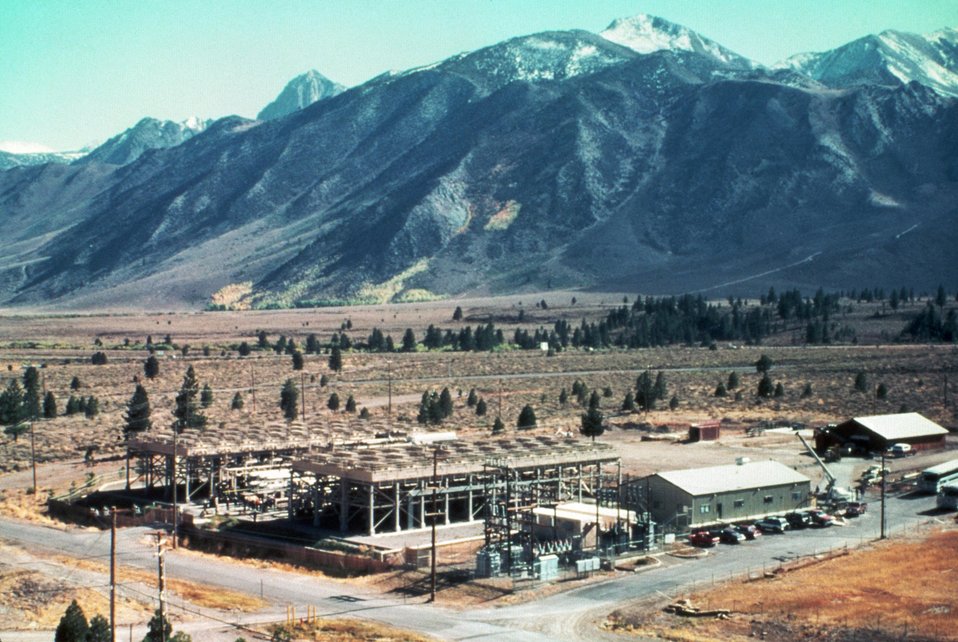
MAMMOTH PACIFIC GEOTHERMAL POWER PLANT IN THE EASTERN SIERRA NEVADA MOUNTAIN RANGE, CALIFORNIA.

THE MAMMOTH GEOTHERMAL PLANT IS AN EXAMPLE OF THE ENVIRONMENTALLY FRIENDLY NATURE OF GEOTHERMAL POWER. THREE AIR-COOLED BINARY UNITS GENERATE A TOTAL OF 28 MEGAWATTS OF ELECTRICITY AND RELEASE ESSENTIALLY NO EMISSIONS INTO THE ATMOSPHERE.